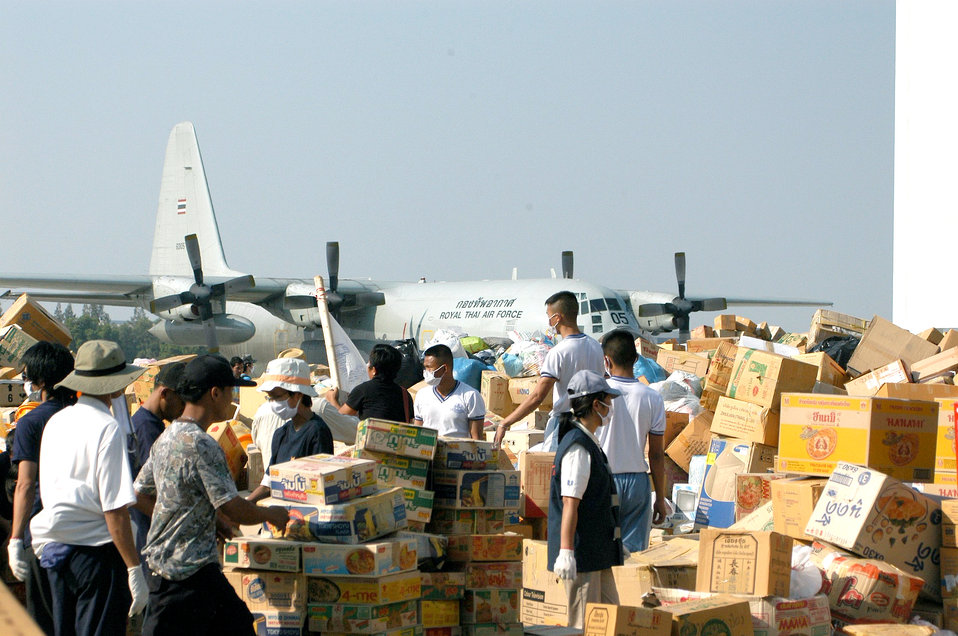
Airmen continue to deliver relief in Thailand

BANGKOK, Thailand -- Volunteers organize a sea of relief supplies between two hangars at the international airport here Jan. 1.